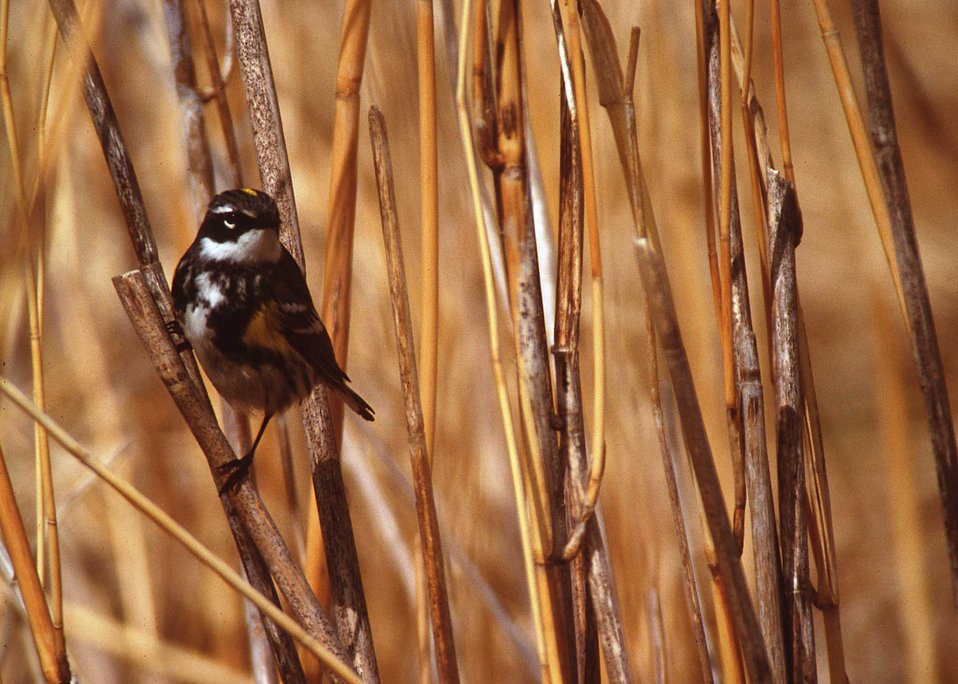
Yellow rumped warbler in a pothole wetland in South Dakota.